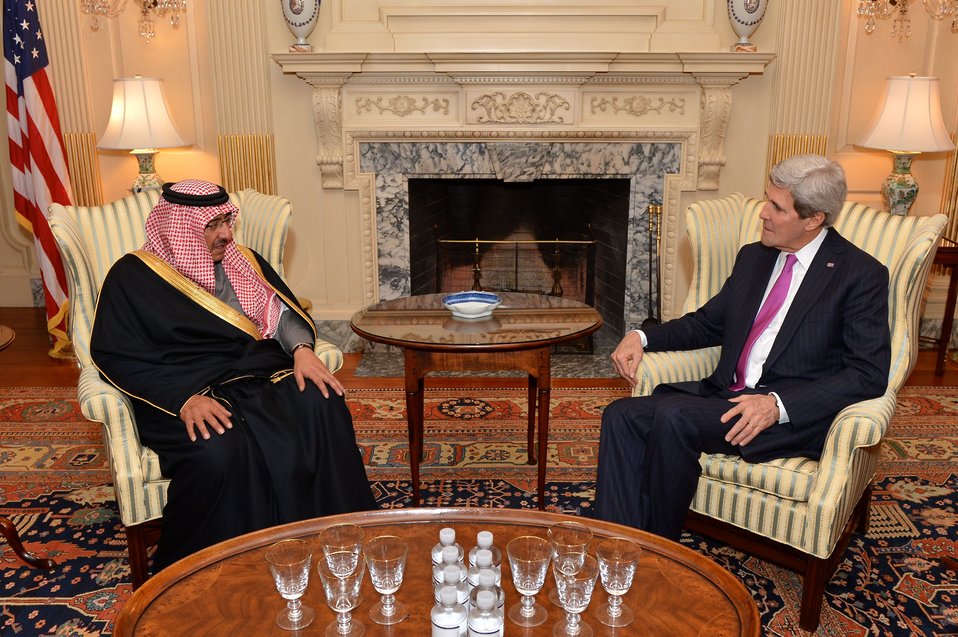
Secretary Kerry Meets With Saudi Interior Foreign Minister Mohammed bin Nayef

U.S. Secretary of State John Kerry meets with Saudi Interior Foreign Minister Mohammed bin Nayef at the U.S. Department of State in Washington, D.C., on February 11, 2014.